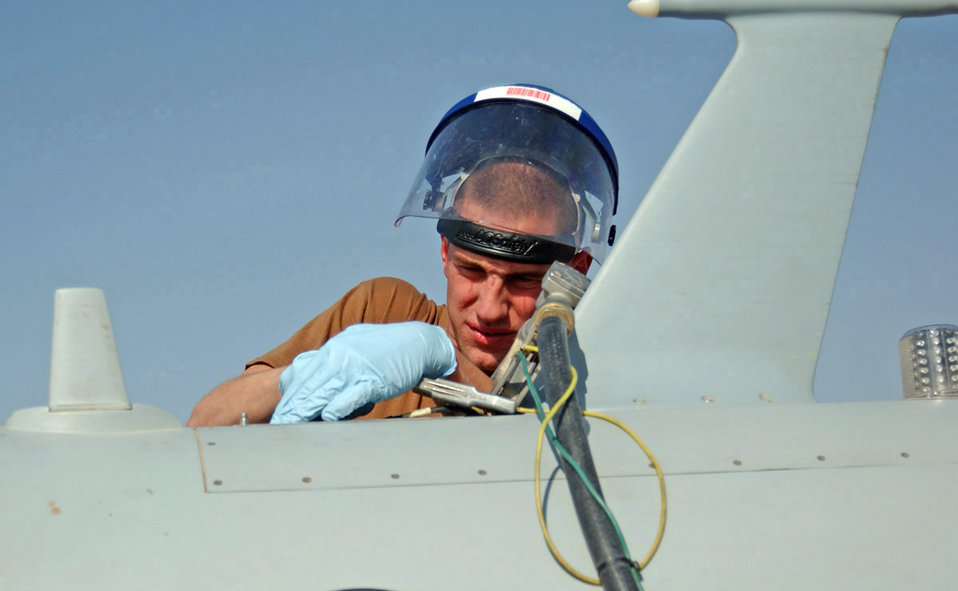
Prowling Predators

BALAD AIR BASE, Iraq (AFPN) -- Senior Airman Chris Thompson gets ready to refuel an MQ-1 Predator before a mission. The Airman is with the 46th Aircraft Maintenance Unit and deployed from Creech Air Force Base, Nev.